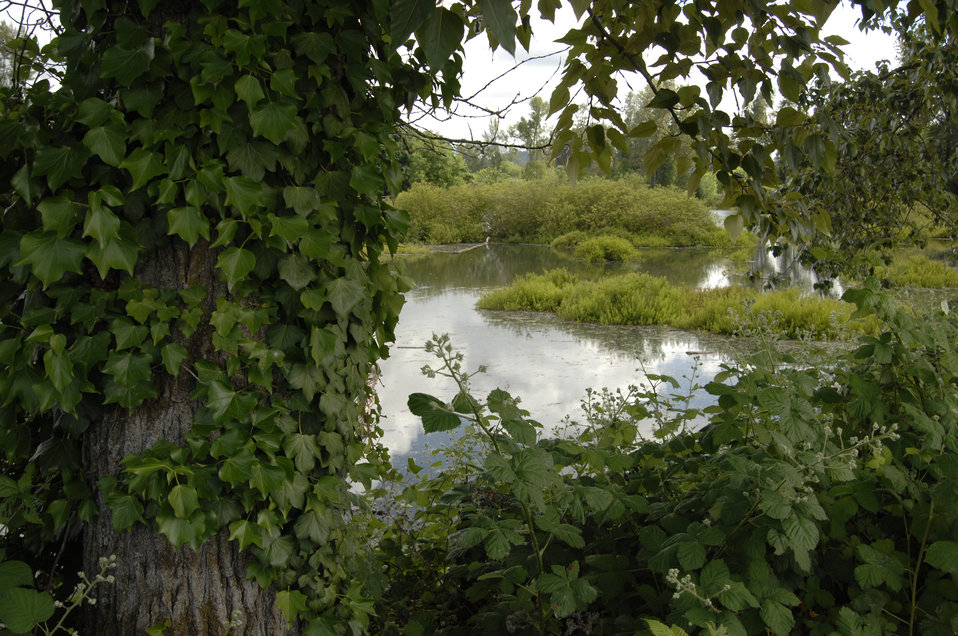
A pond in the city of Eugene, Oregon on June 10, 2008 is involved in the containment of aquatic invasive species with assistance from U.S. Department of Agriculture’s (USDA) Forest Service (FS). The goal of the USDA FS invasive species program is to reduce, minimize, or eliminate the potential for introduction, establishment, spread, and impact of invasive species across all landscapes and ownerships.